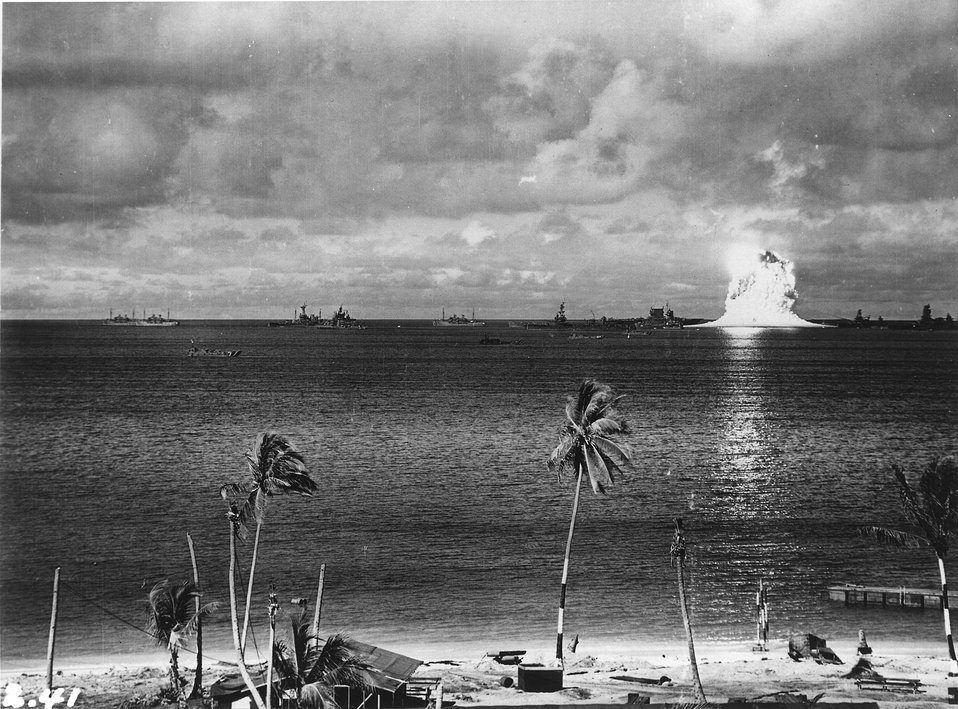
The spray following the Baker explosion.